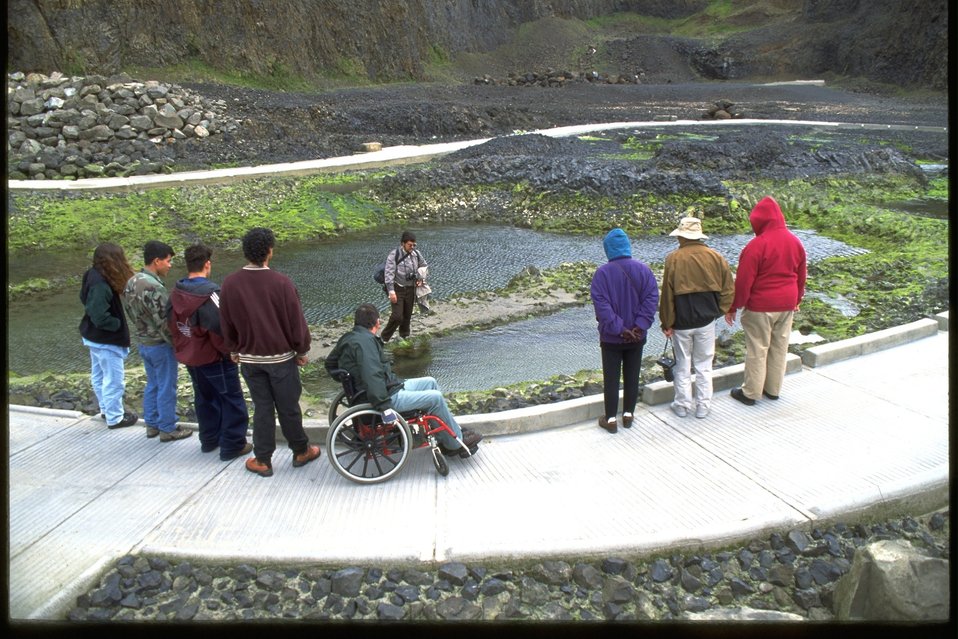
Programs at Yaquina Head Outstanding National Area accessible tidepools.